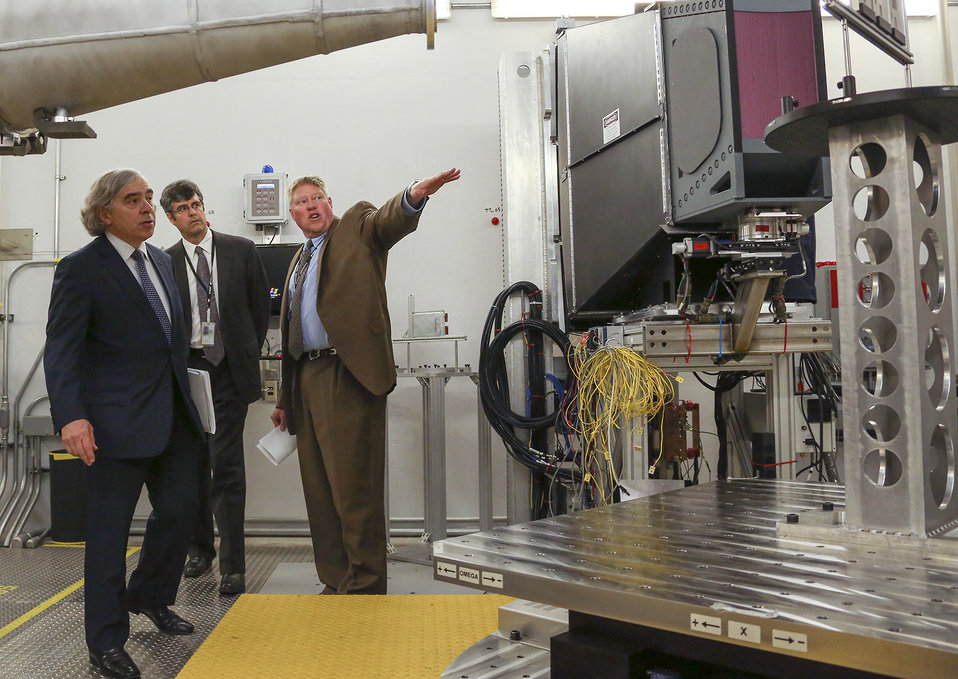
Oak Ridge National Laboratory Associate Lab Director of Neutron Sciences Kelly Beierschmitt discusses the VULCAN diffractometer at the Spallation Neutron Source with Secretary of Energy Ernest Moniz and ORNL Director Thom Mason during a tour on June 3, 2013.